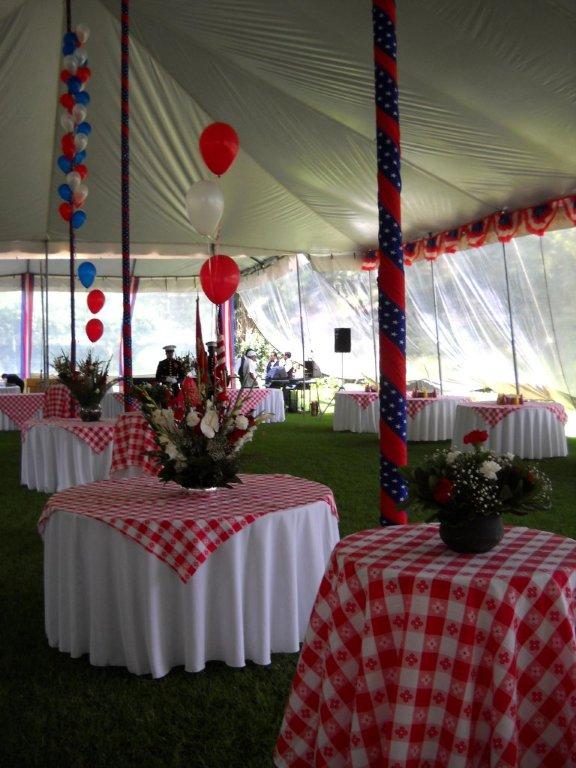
July 4th Celebration at U.S. Embassy in Guatemala

The grounds of U.S. Ambassador to Guatemala Stephen McFarland’s residence are decorated for the U.S. Independence Day celebration in Guatemala City, Guatemala, on July 2, 2010.